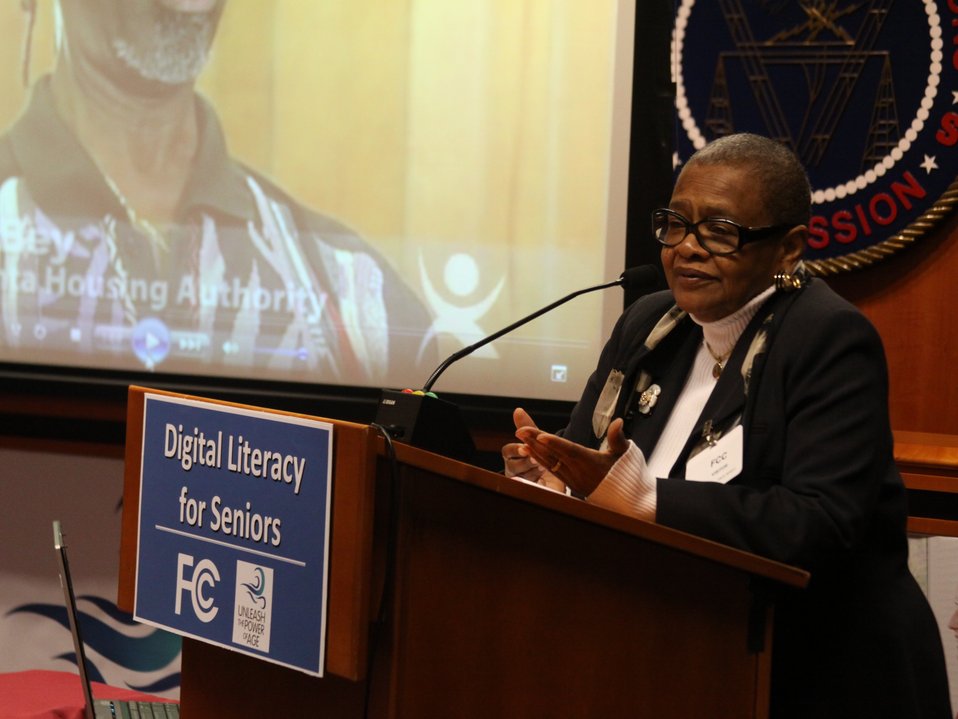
Francine Jefferson, Telecommunications Policy Analyst, NTIA, Broadband Technology Opportunities Program: Digital Literacy for Seniors: How the Internet Can Benefit Older Americans, April 24, 2013